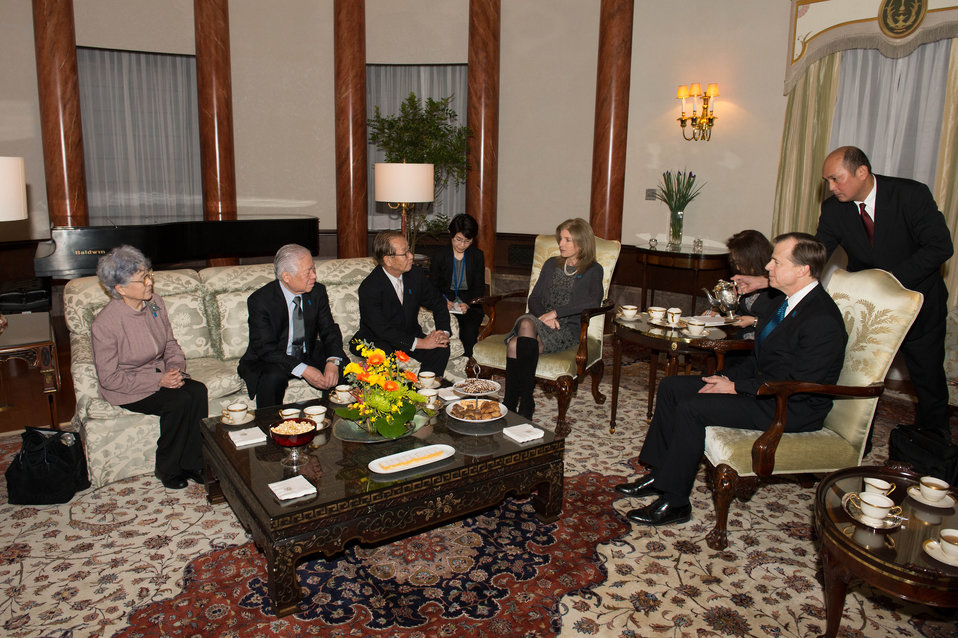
Ambassador Kennedy and Special Representative Davies Meet Abductee Families

U.S. Ambassador to Japan Caroline Kennedy, with Special Representative for North Korea Policy Glyn Davies, meets with family members of the abductees in Tokyo, Japan, on January 30, 2014.